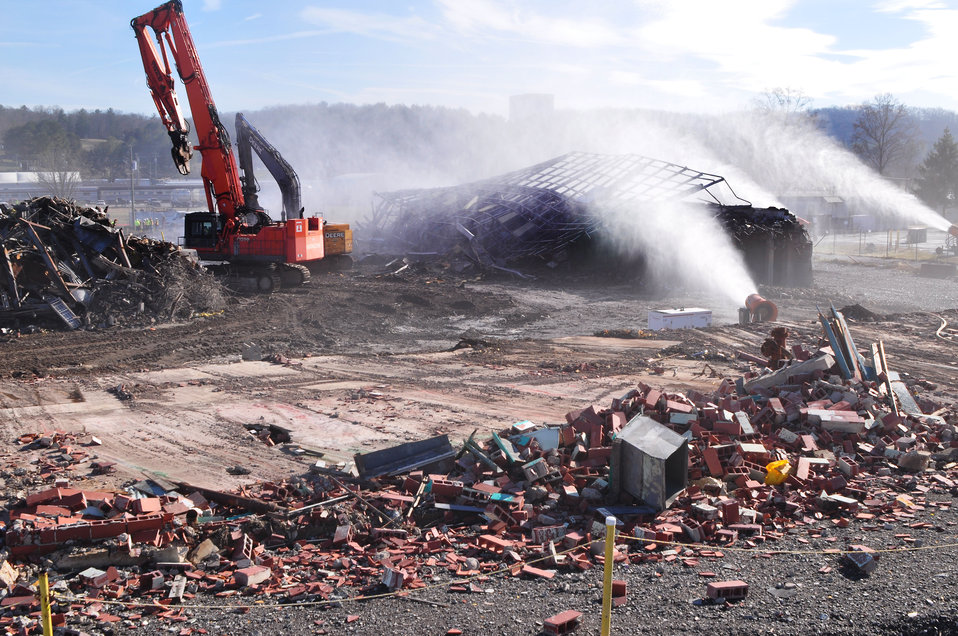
Last Part of K-25 Coming Down Oak Ridge 2013

13-157-1 DOE photo Lynn Freeny 12-19-2013 Oak Ridge Tennessee